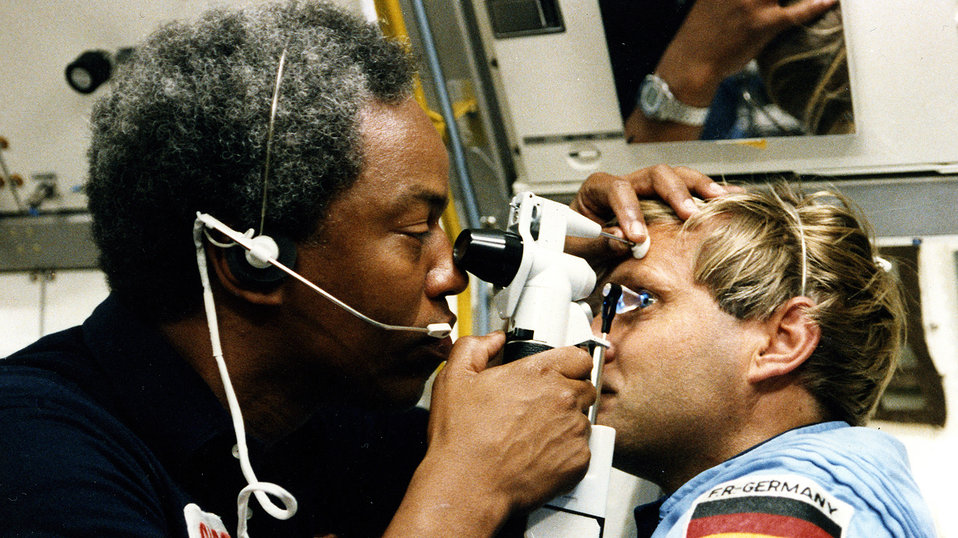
Col. Guion Bluford: First African-American astronaut